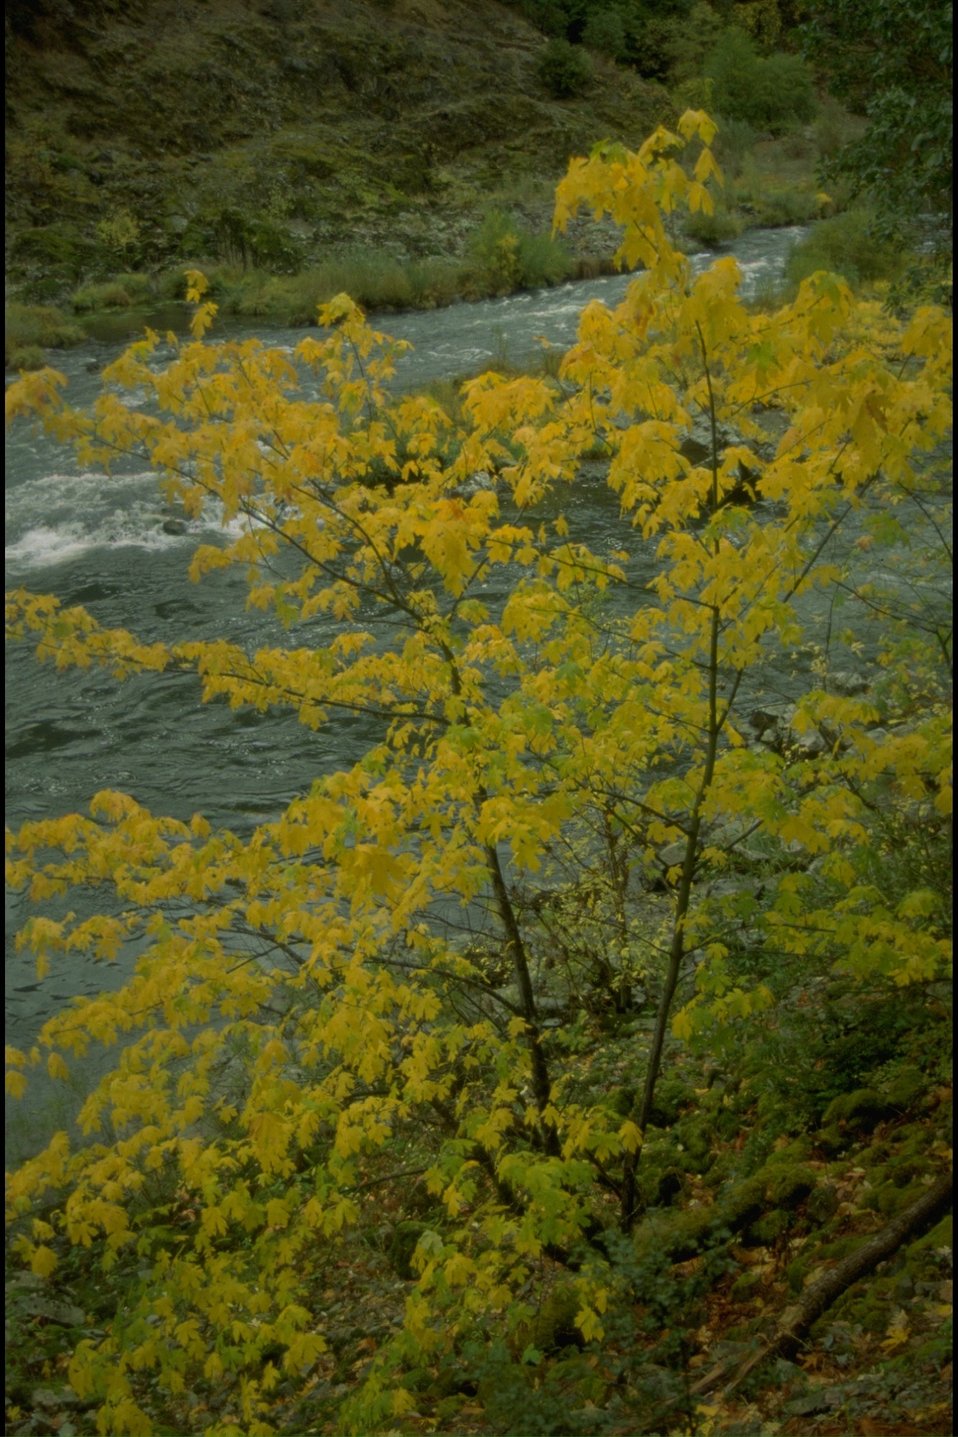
Rogue River - Fall Colors.